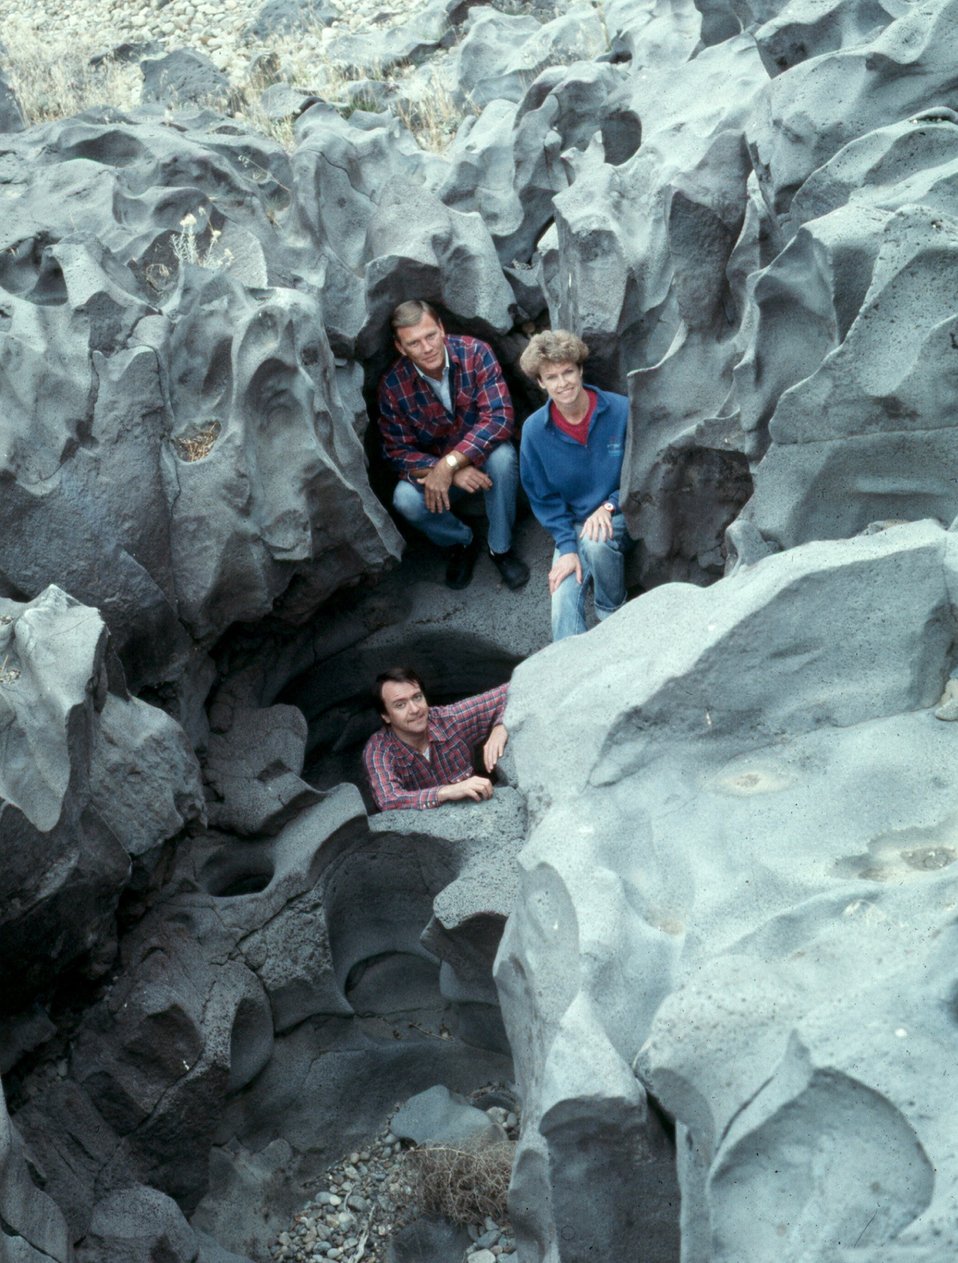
Pothole Shoshone Field Office USRD Upper Snake River District